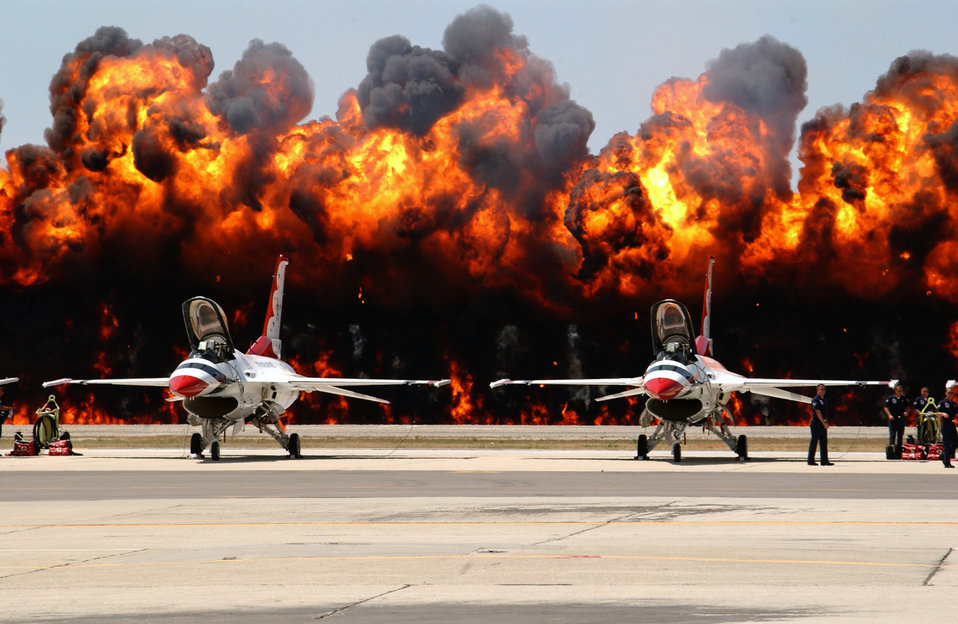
Wall of Flames

MARCH AIR RESERVE BASE, Calif. -- Maintainers perform preflight duties on F-16 Fighting Falcons parked on the ramp while a